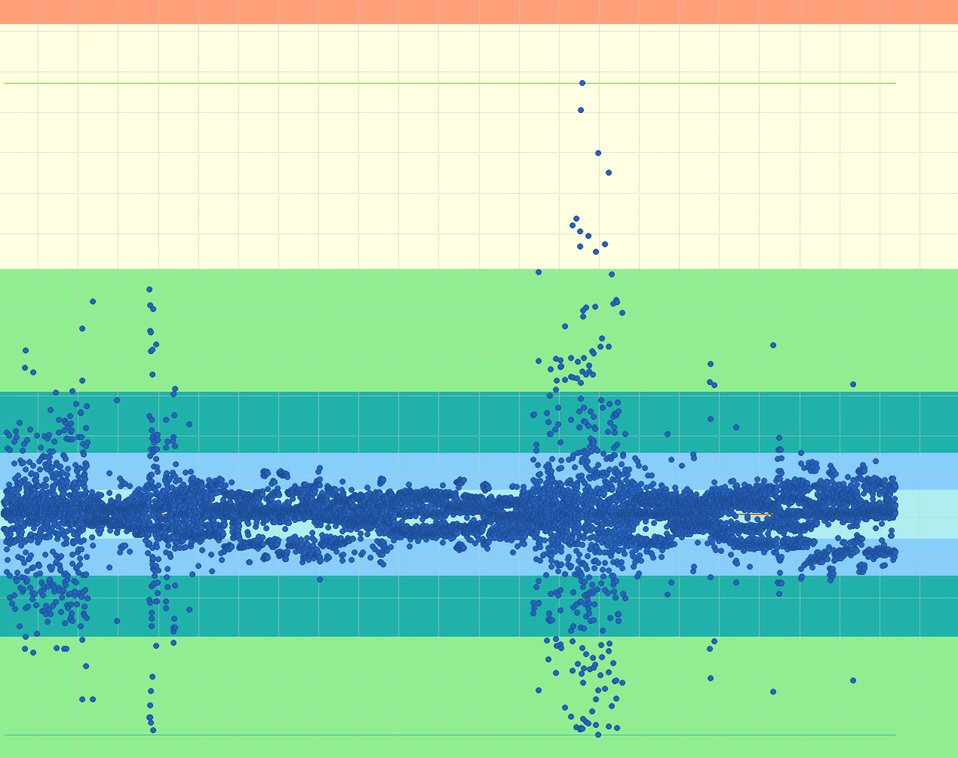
Cyclic Jitters, EtherNet,Industrial Protocol (IP) Performance Test Tool

The points on this graph from the EtherNet/IP Performance Test Tool represent data packets. Those points pictured away from the centerline reflect timing errors in the network communications of the device being analyzed.